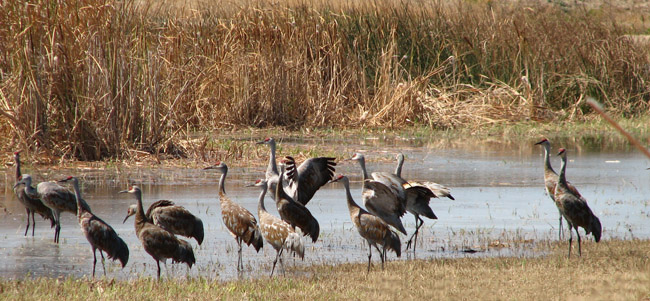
Sandhill Cranes at Merced Nat'l Wildlife Refuge